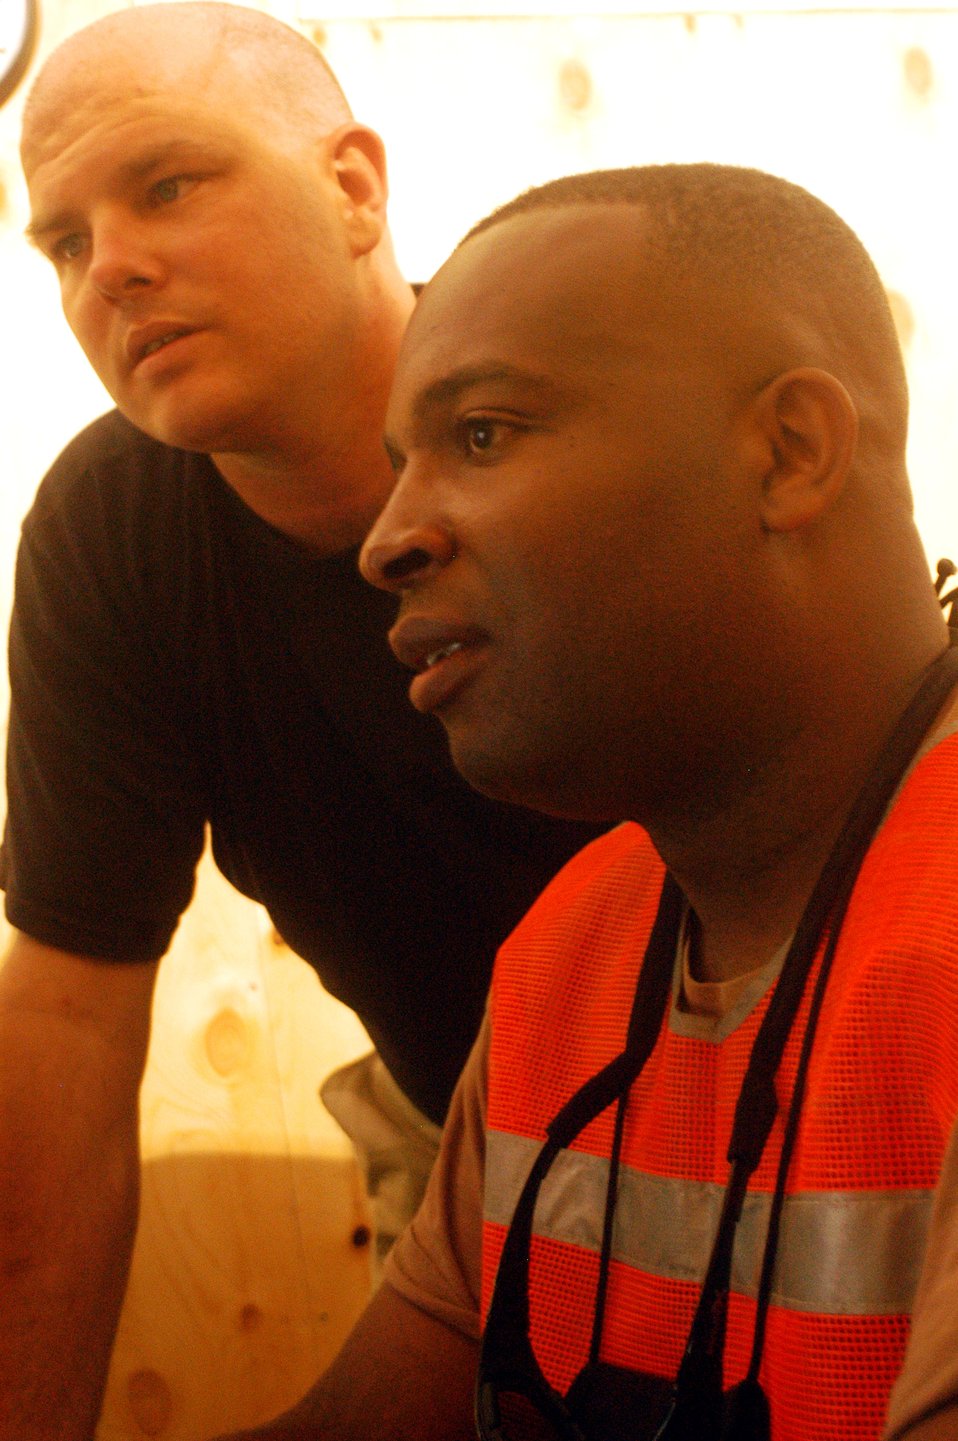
Transient alert provides Bagram its staying power

Staff Sgt. Gordon Torrey (left) and Tech. Sgt. Michael Leach check their computerized aircraft arrival schedule on Tuesday, May16, 2006, at Bagram Air Base, Afghanistan. The two are crew chiefs in the transient alert section of the 455th Expeditionary Maintenance Squadron. Their job is to manage parking for some 650 transient aircraft per month that fly cargo and passengers into Bagram.